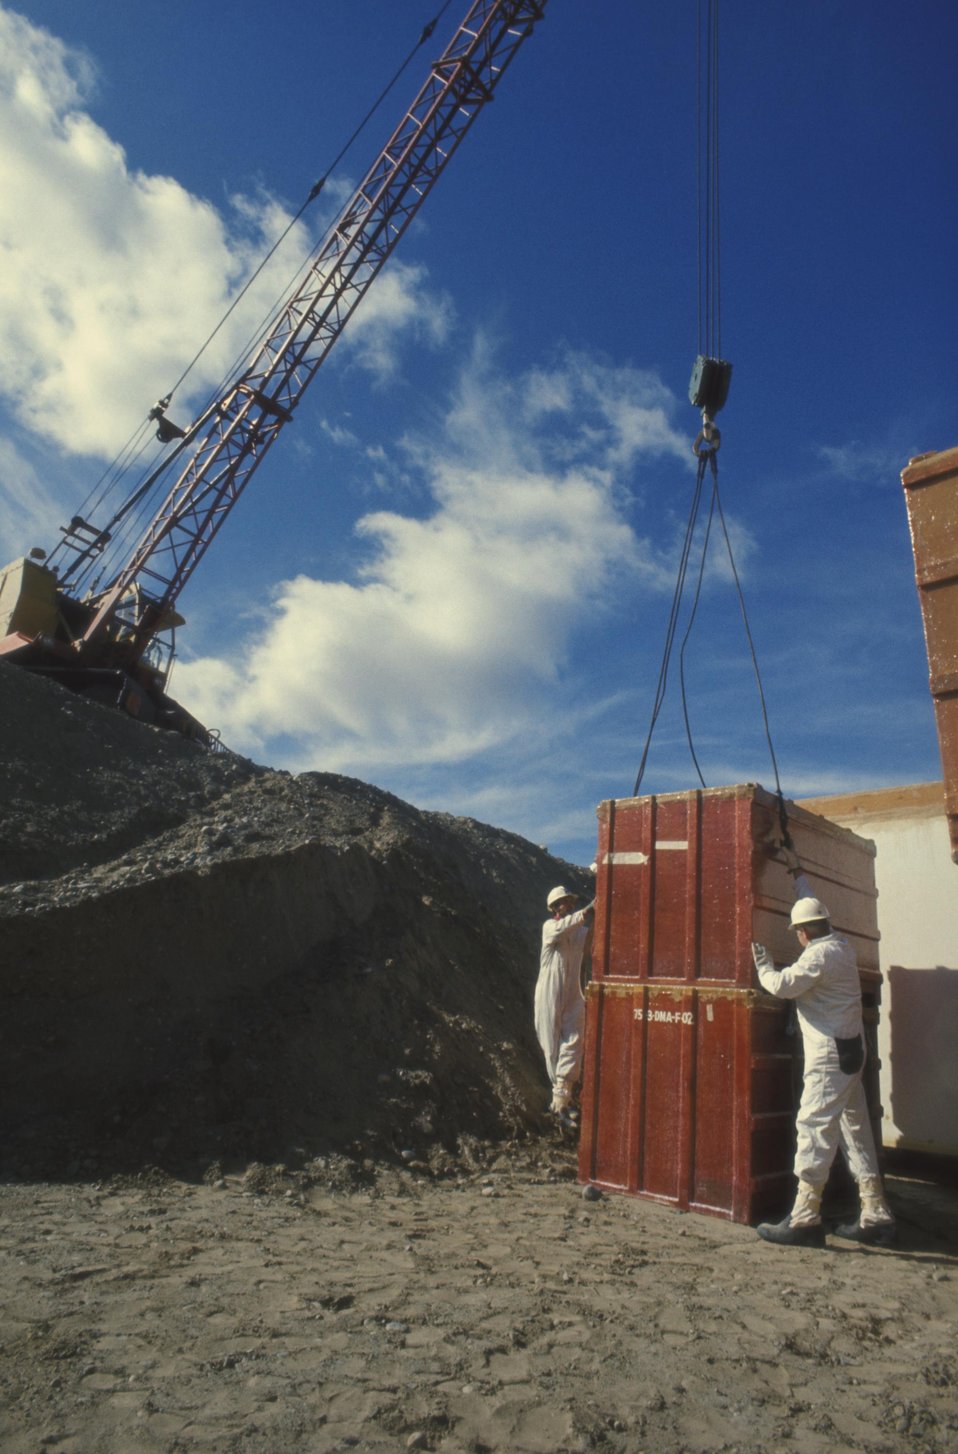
TECHNICIANS ARE PLACING LOW-LEVEL NUCLEAR WASTE CONTAINERS IN BURIAL GROUNDS.

THE PRODUCTION OF NUCLEAR MATERIALS RESULTS IN SOLID WASTES,SUCH AS WORN-OUT EQUIPMENT AND PIPING, THAT REQUIRE SAFE HANDLING AND DISPOSAL. THESE WASTES ARE PACKAGED AND BURIEDIN SPECIALLY PREPARED TRENCHES. BURIAL GROUNDS ARE ROUTINE-LY MONITORED AND STUDIES HAVE SHOWN THAT NO RADIOACTIVE MATERIALS HAVE MIGRATED FROM THESE TRENCHES. VERY LARGE RADIOACTIVE PIECES OF EQUIPMENT THAT CANNOT BE PACKAGED FOR BURIAL ARE STORED ON OLD RAILROAD FLAT CARS IN TUNNELS CONNECTED TO THE FUEL REPROCESSING PLANT. THIS EQUIPMENT MAY BE REMOVED LATER FOR DECONTAMINATION AND SALVAGE OR FINAL DISPOSAL.